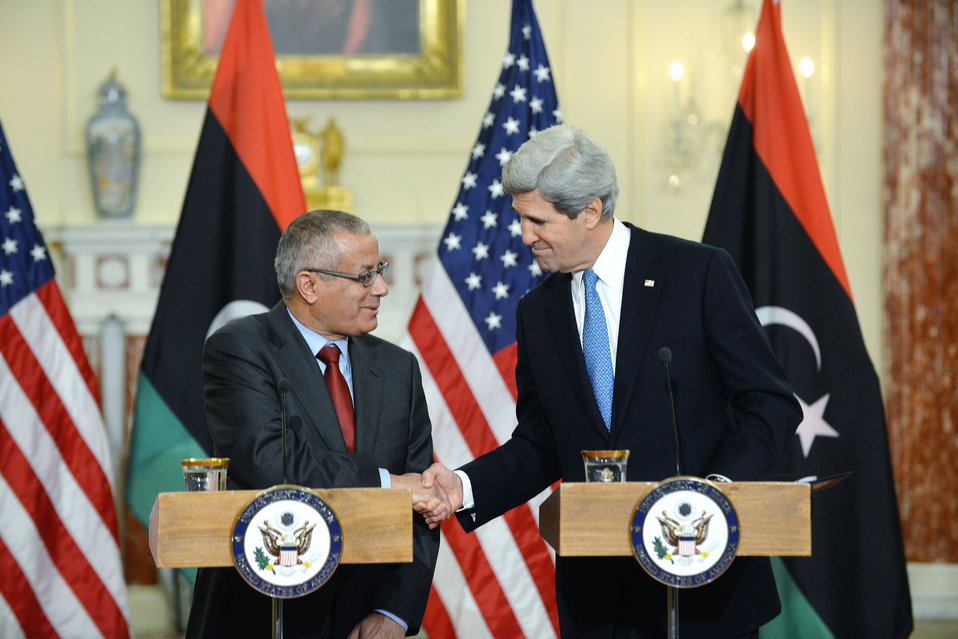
Secretary Kerry Shakes Hands With Libyan Prime Minister Zeidan

U.S. Secretary of State John Kerry shakes hands with Libyan Prime Minister Ali Zeidan after addressing reporters at the U.S. Department of State in Washington, D.C., on March 13, 2013.